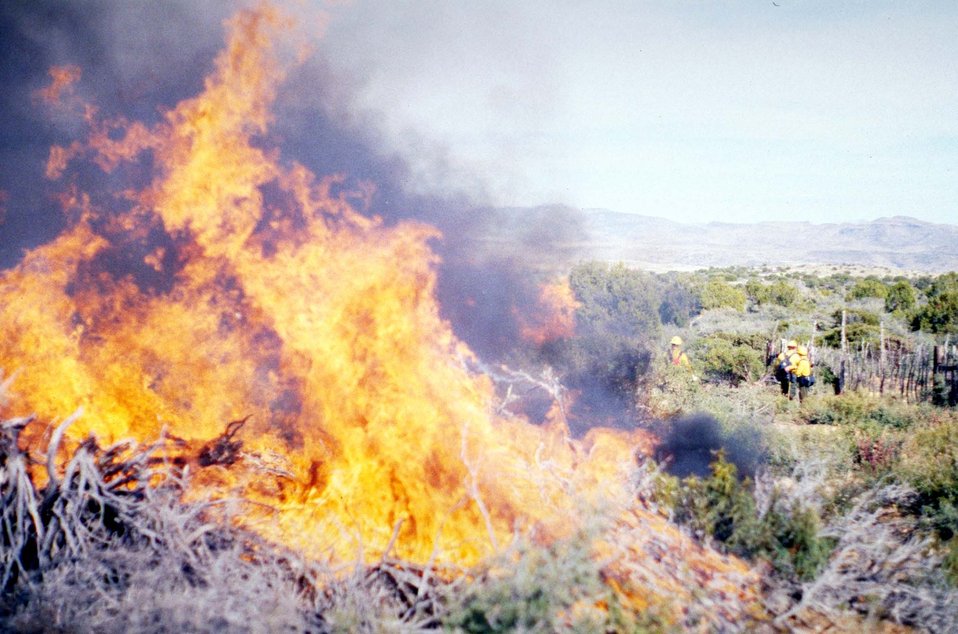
Photo of disposal brush piles being burned just south of the Pine Lake subdivision in the Hualapai Mountains south of Kingman. This is part of a cooperative effort between BLM, local residents, the Pine Lake Fire Department, Mohave County and the Arizona State Land Department.